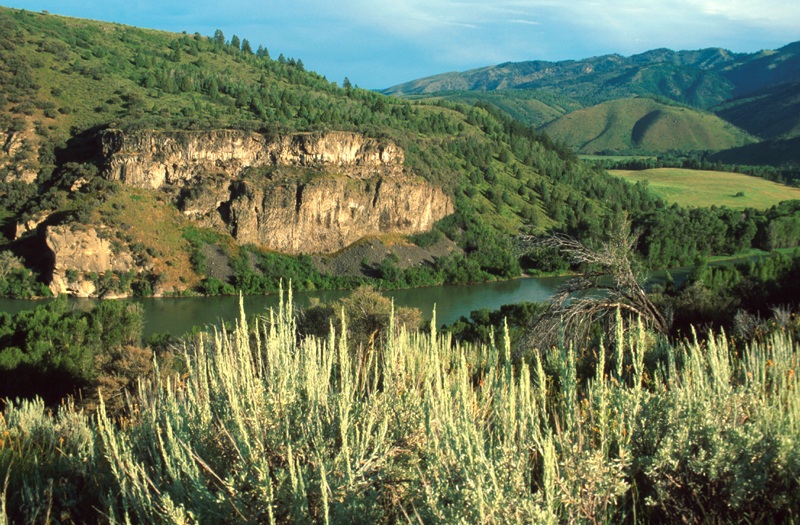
South Fork of the Snake River